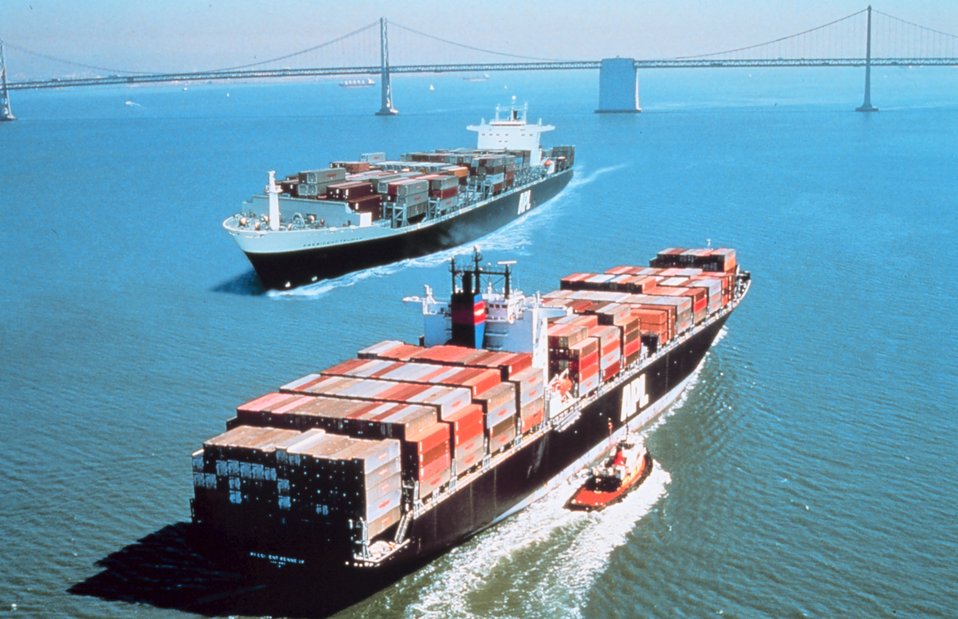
Two containerships passing each other in San Francisco Bay.